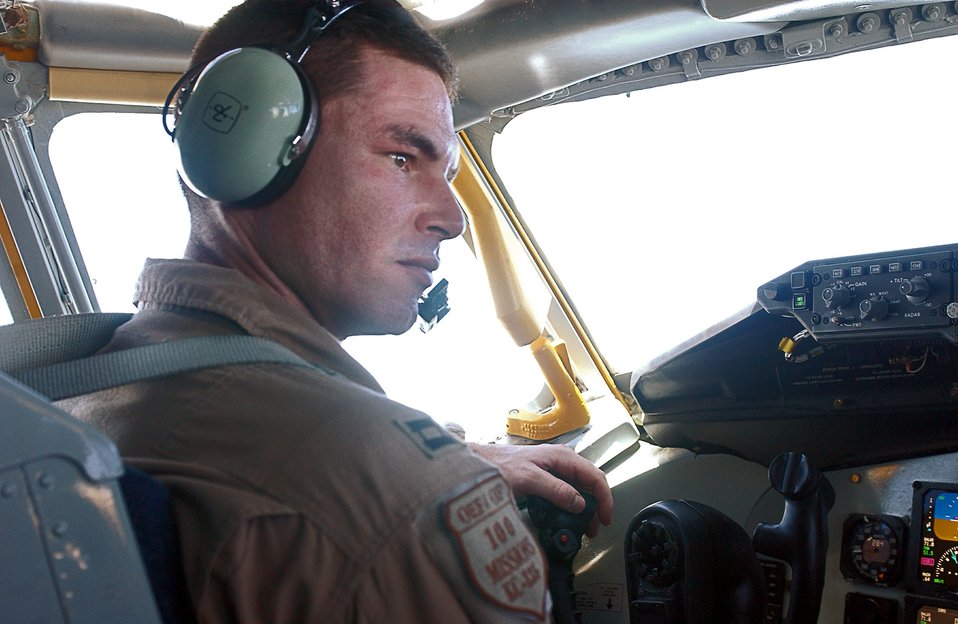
Air refueling missions essential to ground troops

SOUTHWEST ASIA -- Capt. Scott Meyer waits for permission to take off from a forward-deployed location. He is a KC-135 Stratotanker pilot assigned to the 908th Expeditionary Air Refueling Squadron and is from McConnell Air Force Base, Kan. He flies air refueling missions almost daily over Afghanistan and Iraq.